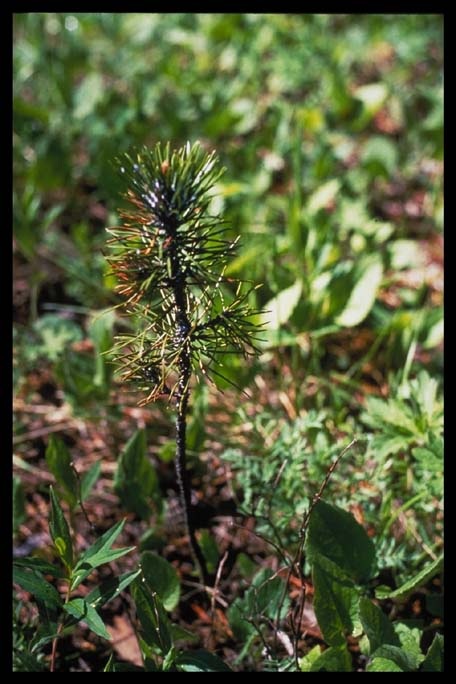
Regrowth